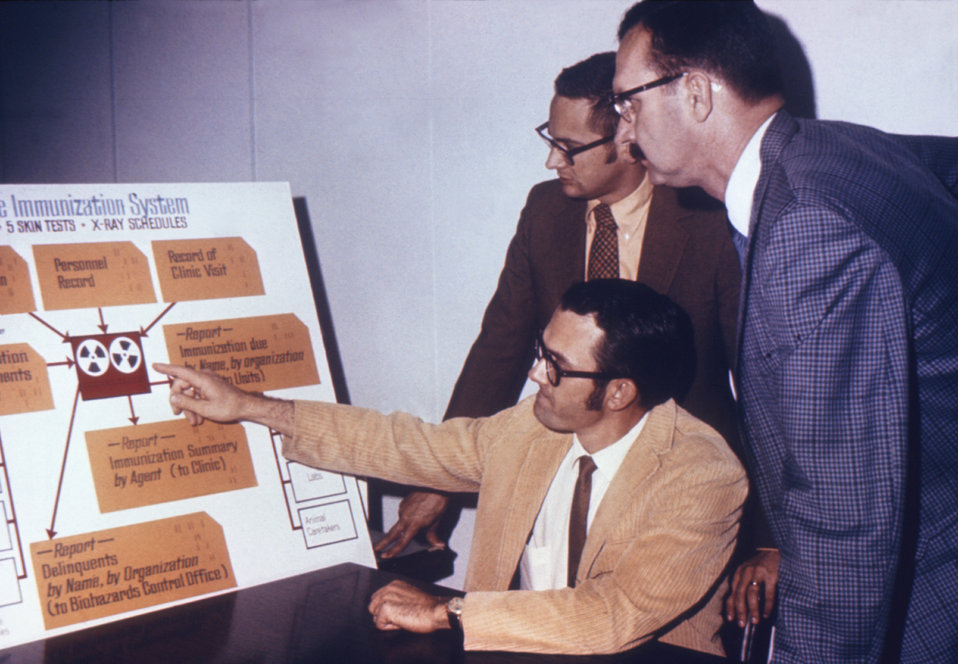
This 1971 photograph shows system analysts discussing an immunization schedule system implemented during the early 1970s.